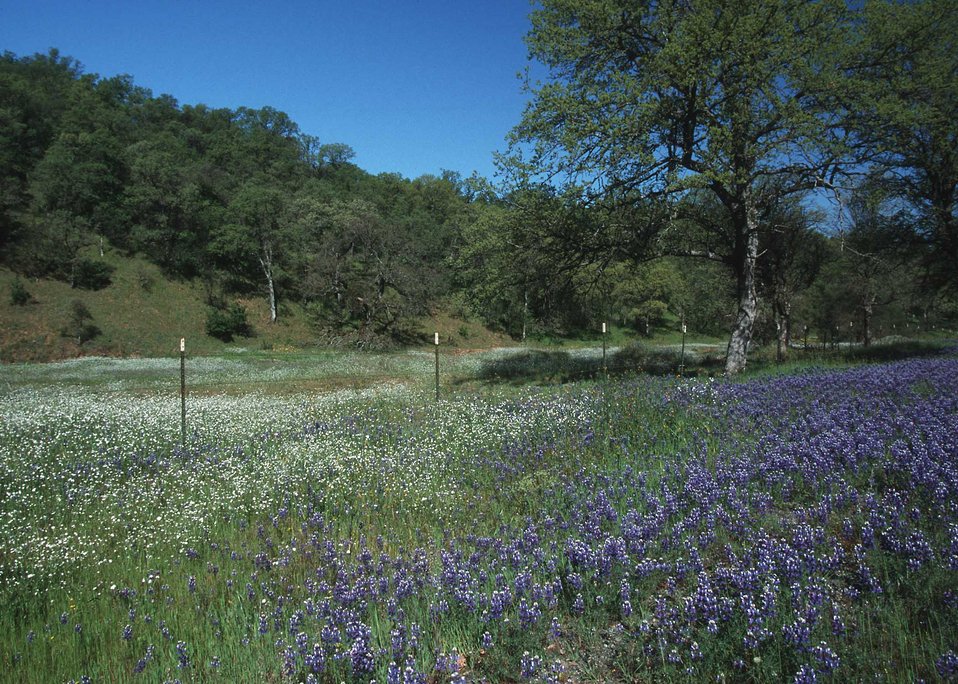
A countryside landscape

Open space is home for wildlife and provides beauty to the countryside.